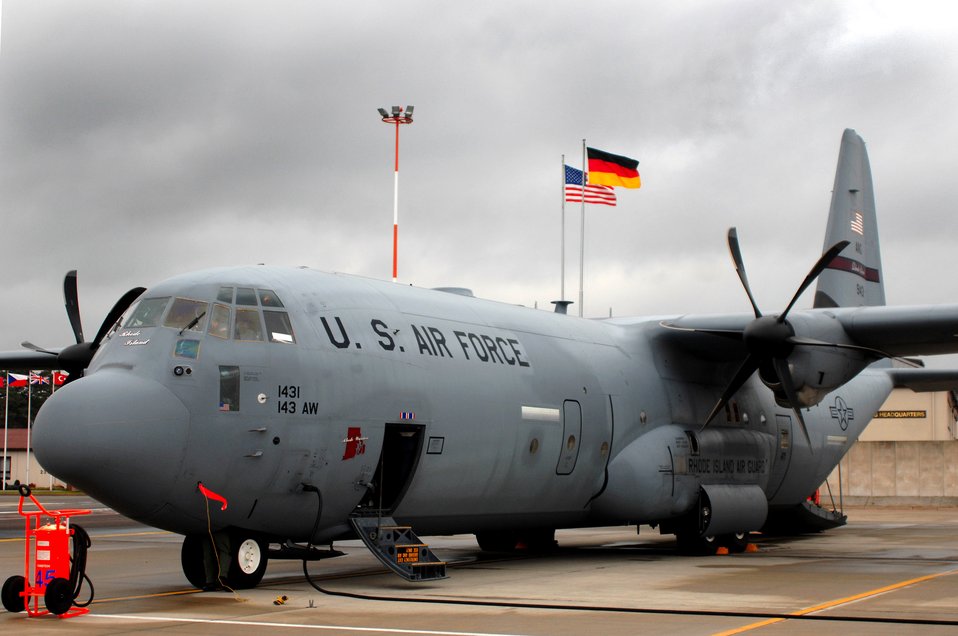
Ramstein receives first upgraded C-130

A new J model C-130 Hercules aircraft is prepped for take off Nov. 8 at Ramstein Air Base, Germany. Starting 2009-2011, the C-130J will began to replace the aging C-130Es at Ramstein.